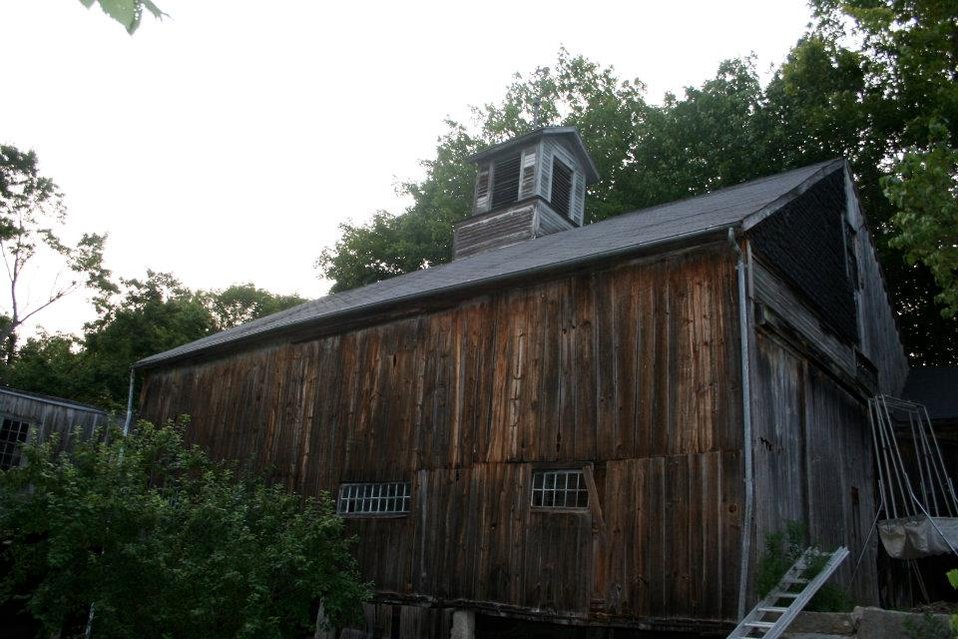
Massachusetts barn with little brown bat maternity colony